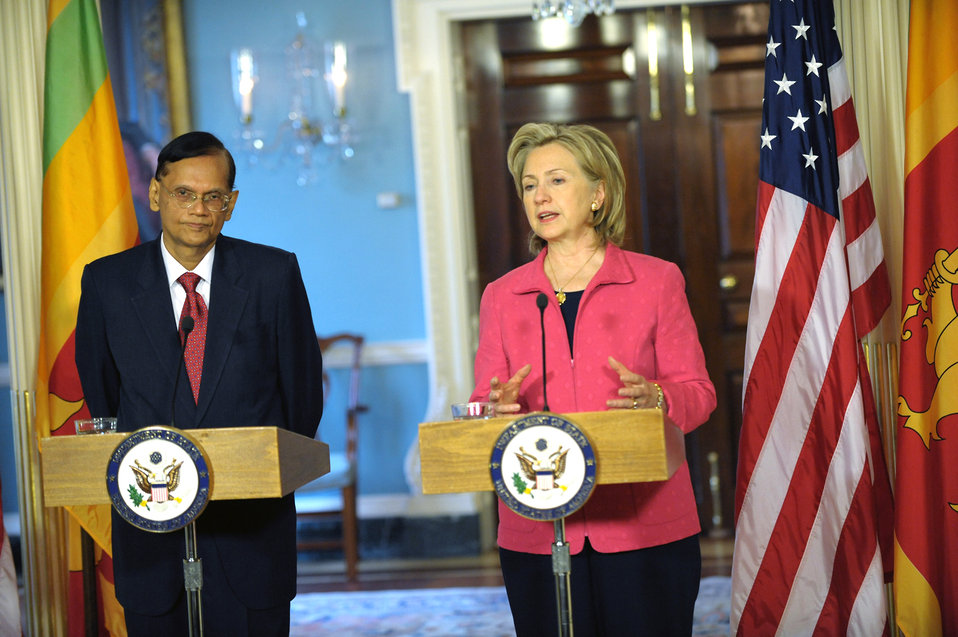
Secretary Clinton Holds Joint Press Availability With Sri Lanka Minister of External Affairs G.L. Peiris

U.S. Secretary of State Hillary Rodham Clinton holds a joint press availibility after a bilateral meeting with Sri Lanka Minister of External Affairs G.L. Peiris in the Treaty Room at the U.S. Department of State in Washington, D.C., on May 28, 2010.